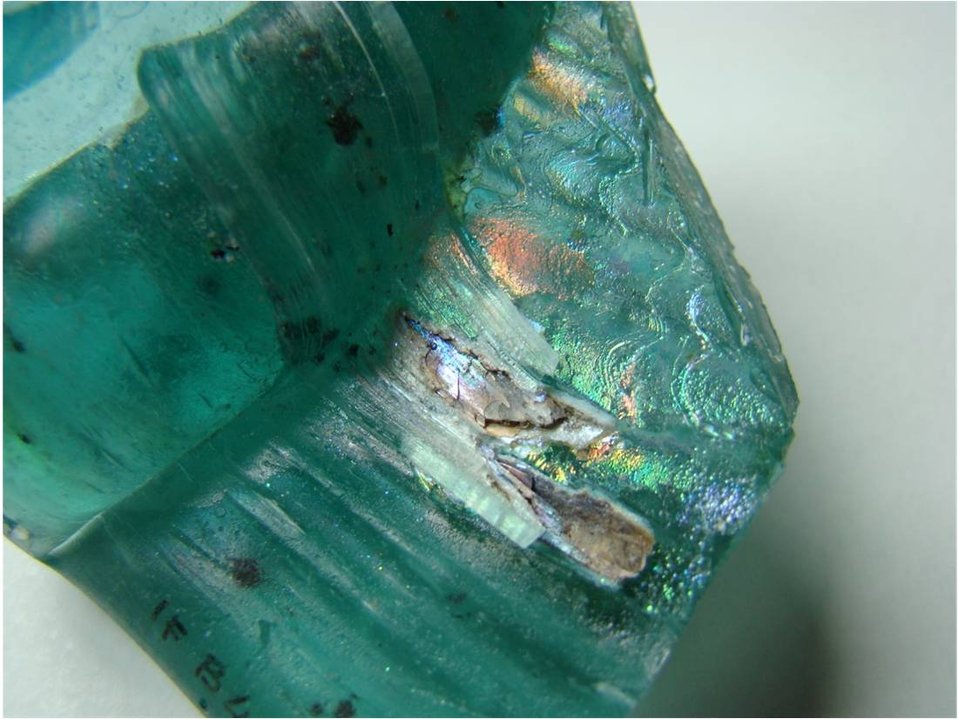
Studies of Ancient Glasses Have Potential to Inform DOE’s Nuclear Waste Disposition Alternatives

Scientists at the Department of Energy’s (DOE) Pacific Northwest National Laboratory (PNNL) are studying pieces of ancient glass that were recently retrieved from two 1,800-year-old shipwrecks and ruins to assist in research efforts for safely storing nuclear waste. One way to store HLW safely is to turn it into durable glass through a process called vitrification. Glass dissolves slowly and it is difficult to understand changes that happen over thousands or even a million years. Unlocking the mechanisms of glass corrosion behavior has significant implications on DOE’s current vitrification methods and storage of nuclear waste.